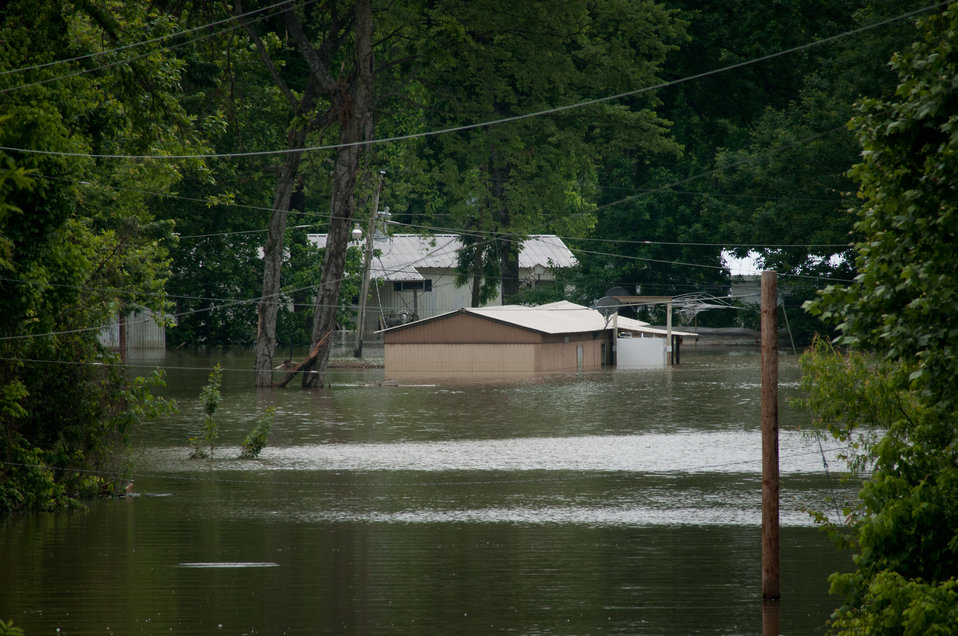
Floods waters from Mississippi River inundated Tunica Cutout, MS on Sunday, May 15. 2011. The entire population was relocated nearby to the protected side of the levee.